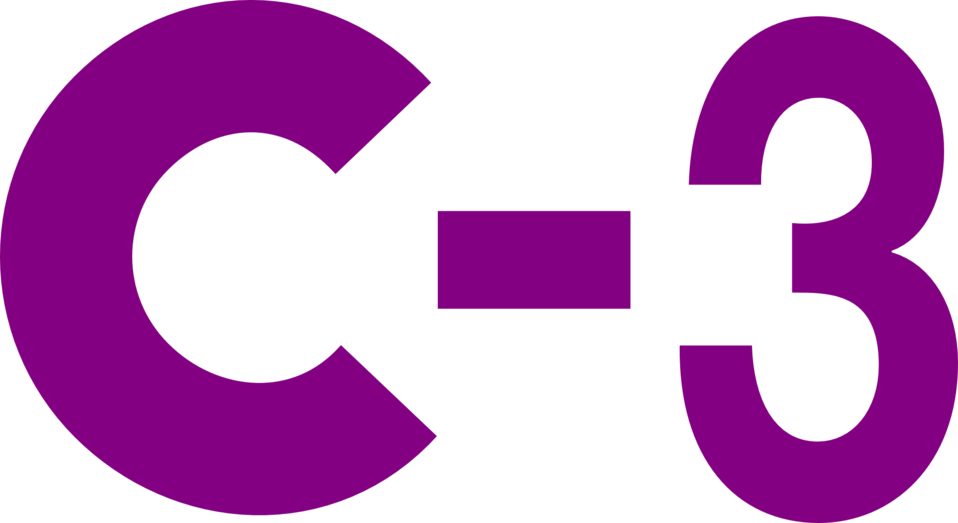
Español: Linea C3 de Cercanías Valencia